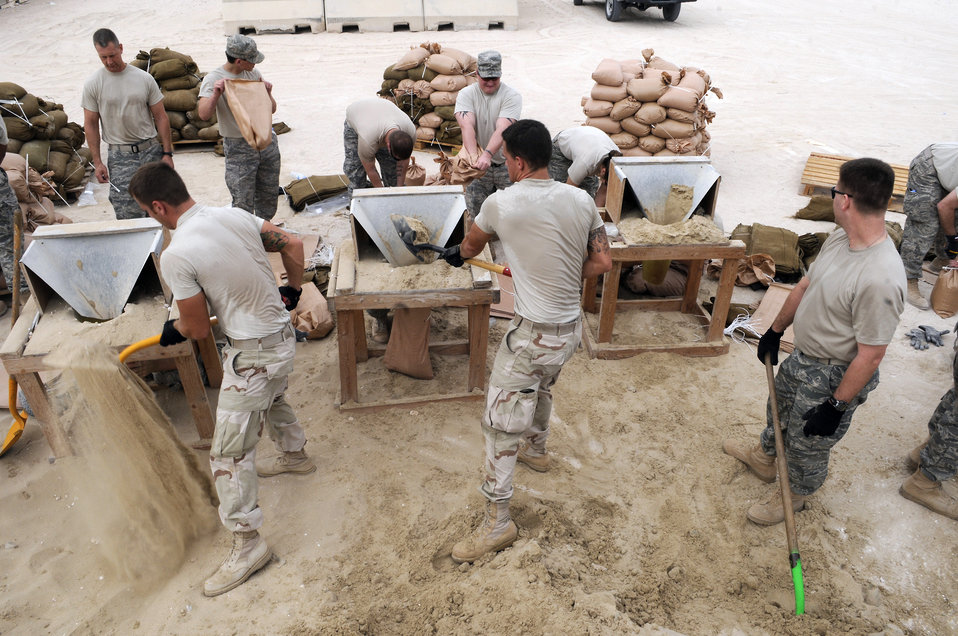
Working in the sand

Airmen from the 379th Expeditionary Communications Squadron fill sandbags Nov. 4 at an air base in Southwest Asia. The sandbags will be used to fortify emergency bunkers. The Airmen are deployed here in support of operations Iraqi Freedom and Enduring Freedom and Joint Task Force-Horn of Africa.